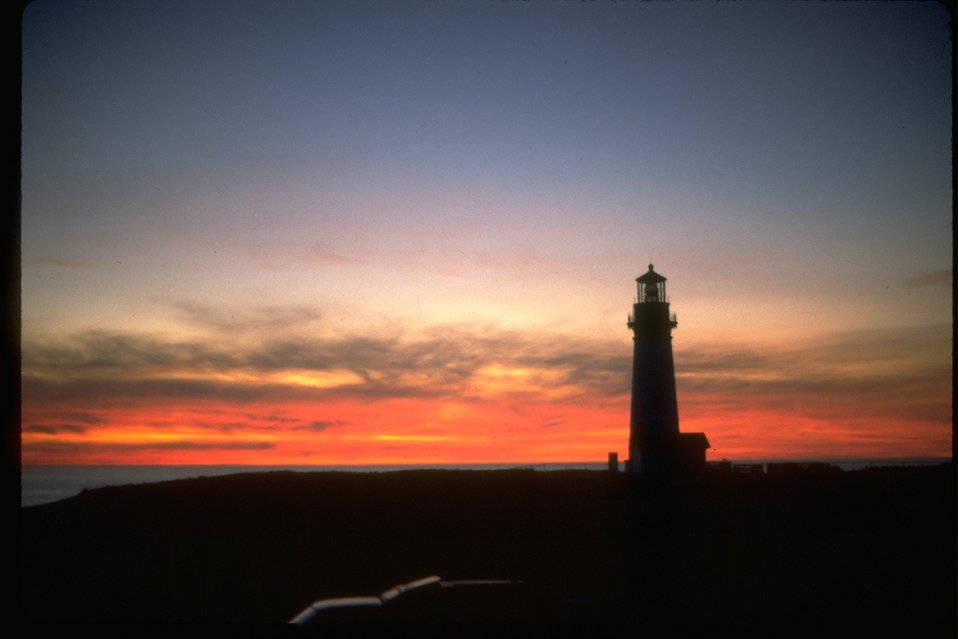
Sunset at the Yaquina Head lighthouse.